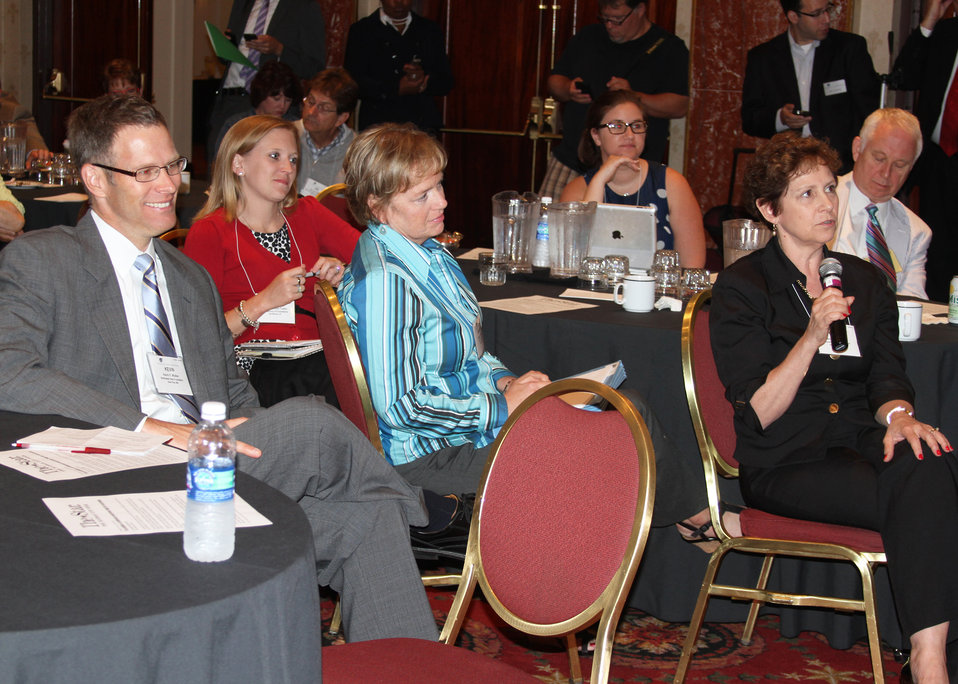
The theme of the 2011 Rural Philanthropy Conference is “Innovate, Implement, Impact.” The nation’s top innovative philanthropic leaders convened in Kansas City, Mo on Wednesday, July 25-27, 2011. The conference provided foundation leaders with the tools and knowledge required to capture new resources, engage in the arena of public policy, and address the unique challenges of rural economies. Agriculture Secretary Tom Vilsack gave the closing speech at the 2011 Rural Philanthropy Conference held at the Marriott in Kansas City, MO on Wednesday, July 27, 2011. Community Foundation of Greater Dubuque Nancy VanMilligen (right) asked Secretary Vilsack about the role the Department of Agriculture would play in rural philanthropy projects.